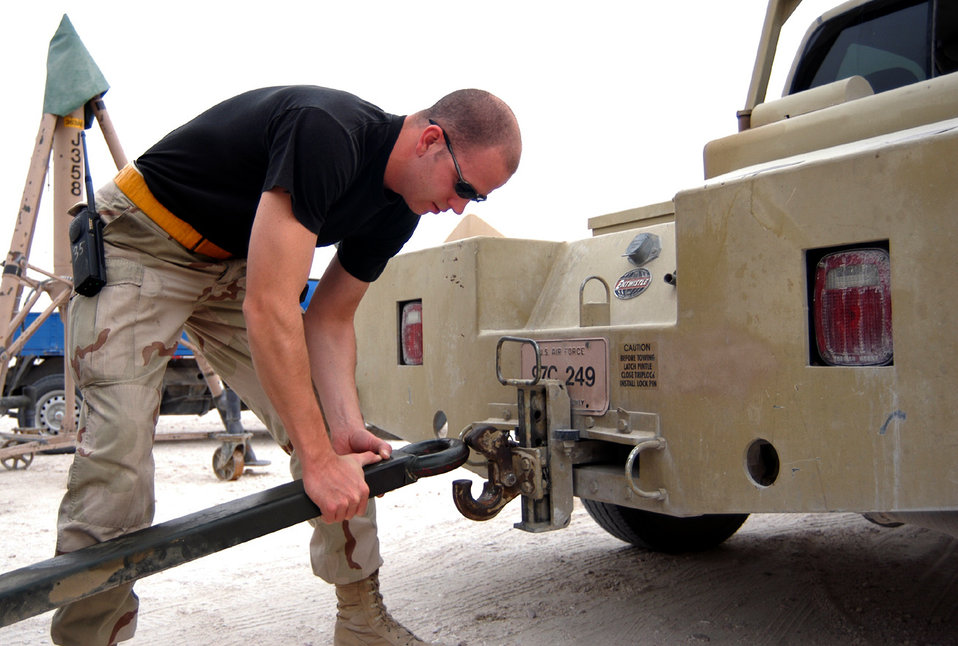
Equipment check

SOUTHWEST ASIA -- Staff Sgt. Brandon Caves connects a generator to a bobtail vehicle. Sergeant Caves is assigned to the 379th Expeditionary Maintenance Squadron. He is deployed from Grand Forks Air Force Base, N.D. The squadron's aerospace ground equipment Airmen service, repair and inspect up to 300 pieces of equipment daily.